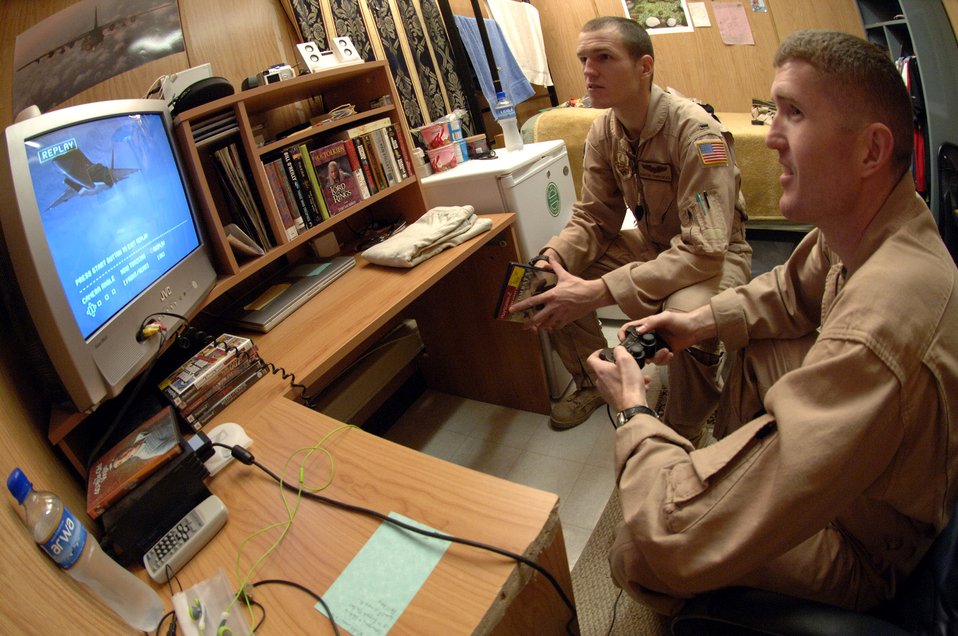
Sibling tanker pilots connect 7,700 miles from home

Marine Capt. Jason Torbensen shares off-duty time with his younger brother, Air Force 1st Lt. Dustin Torbensen in his dormitory room Nov. 28 at a forward-operating base in Southwest Asia. Captain Torbensen is deployed for one year in Southwest Asia as the 3rd Marine Airlift Wing's liaison officer to the Combined Air Operations Center, and Lieutenant Torbensen is soon to return from a two-month rotation to Southwest Asia. The brothers are from Kaysville, Utah.